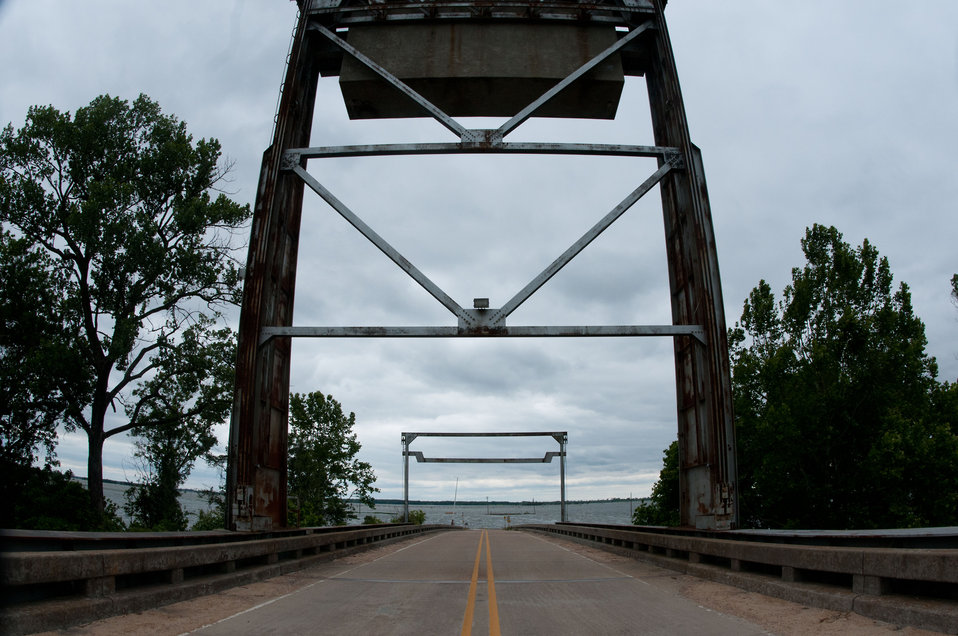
This bridge is supposed to cross over a river, not lead to a lake, but the Mississippi River floodwaters have pushed into the Yazoo River and flooded these corn (left) and wheat (right) fields in Satartia, MS, on Monday, May 16. 2011. The community of 96 was evacuated and this clearing of approximately 4,000 acres was completely flooded. Wave action and decay has freed parts of corn stalks collecting along the new shoreline. The water saturated soil does not allow enough oxygen to the plant, by the time the water is expected to recede, the stalks will be dead. The wheat was harvested earlier than scheduled from wet fields and will have to be dried before being used or sold.